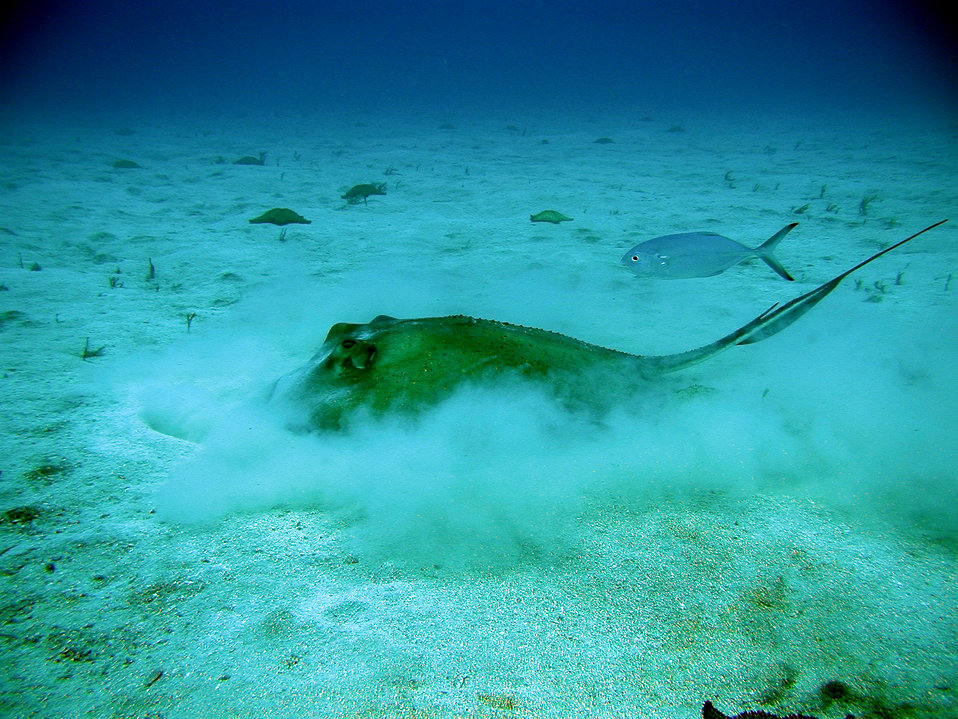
Southern stingray (Dasyatis americana)